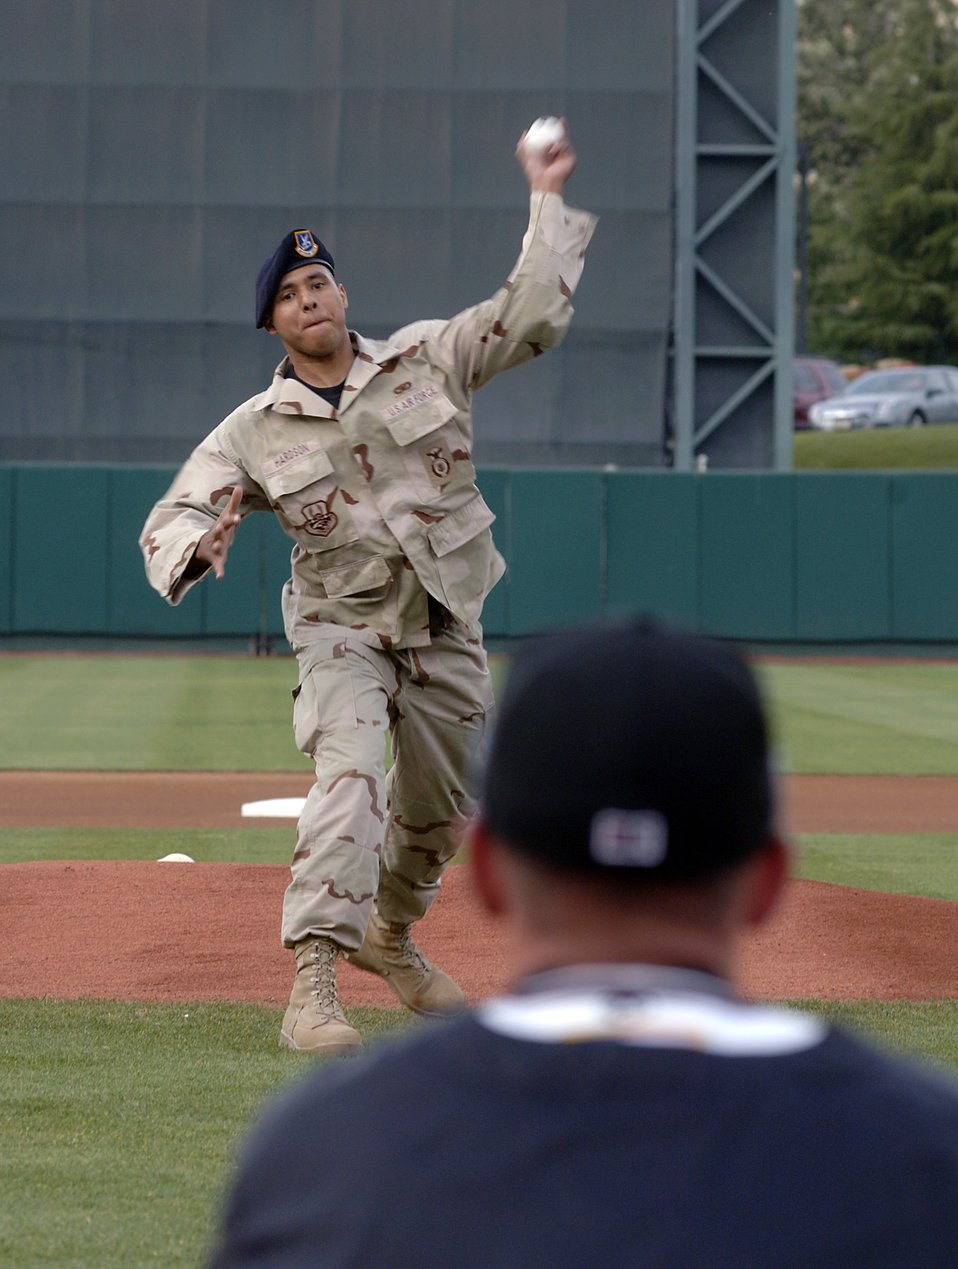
Sacramento Rivercats host Air Force Week event

Staff Sgt. Raymond Hardson throws out the first pitch before a local minor league baseball game June 4 during Air Force Week in California. The purpose of Air Force Week is to inform and educate the American public about the importance and roles of the Air Force in America's national defense. Sergeant Hardson is a security forces Airman from Beale Air Force Base, Calif.